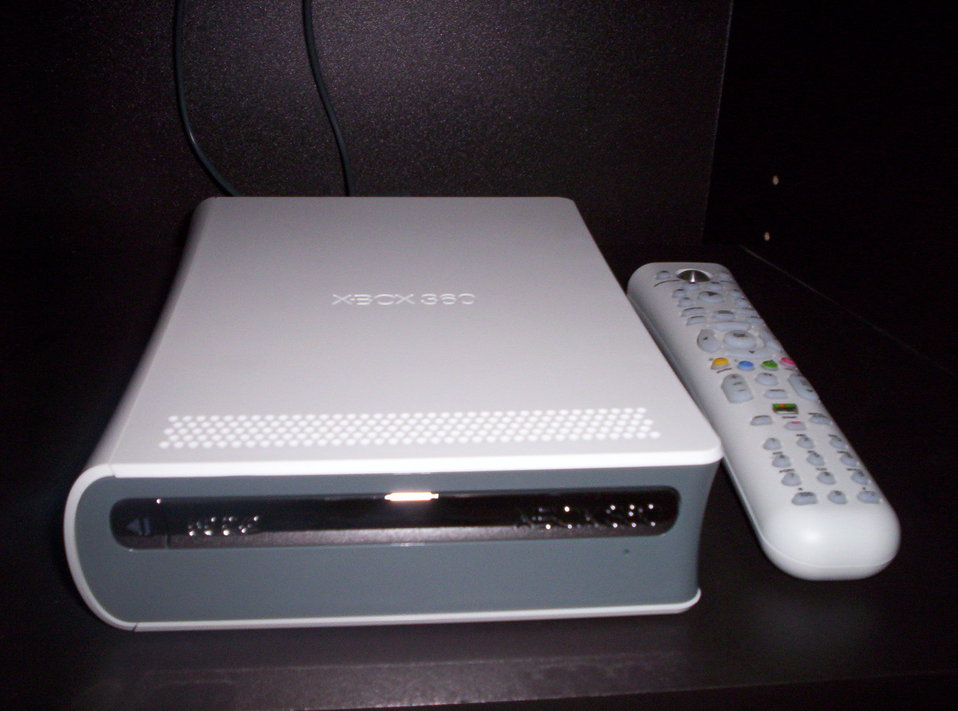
Deutsch: XBOX 360 HD-DVD Laufwerk und Xbox 360 Fernbedienung Xbox 360 HD-DVD drive add-on and Xbox 360 Universal Media Remote